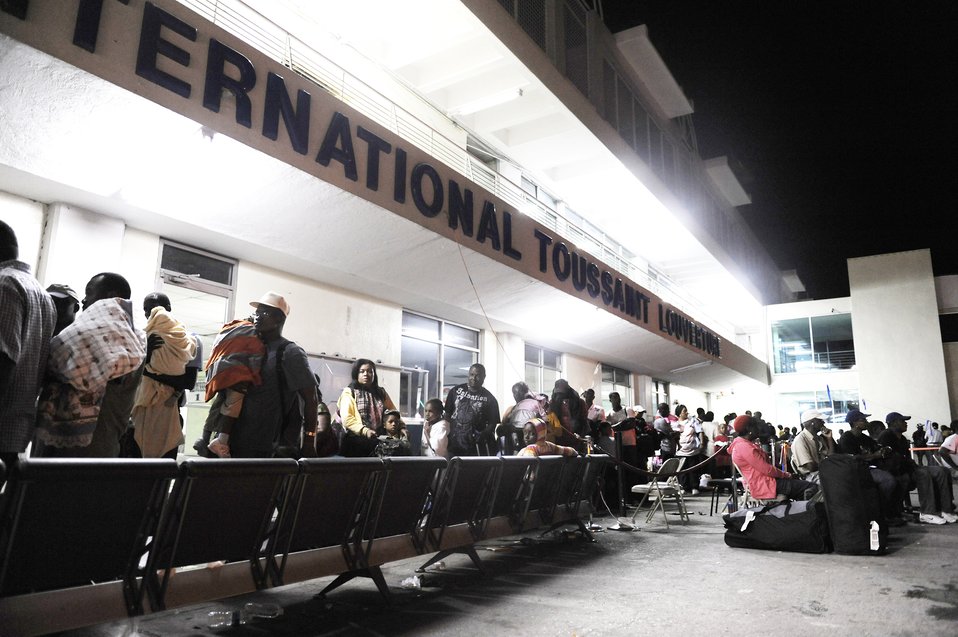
Returning

U.S. citizens in Haiti wait to be granted a flight back to the United States Jan. 20, 2010 at Toussaint L'Ouverture International Airport in Port-au-Prince, Haiti.